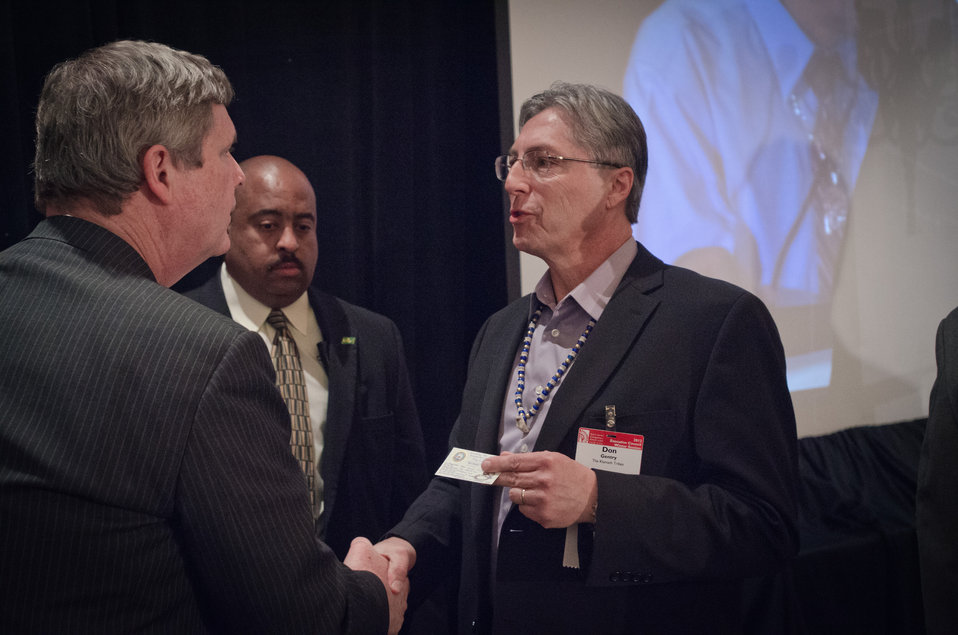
Agriculture Secretary Tom Vilsack spoke with the Klamath Tribes’ Don Gentry at the National Congress of American Indians Tribal Nations Legislative Summit at L’Enfant Plaza Hotel in Washington, D.C., on Wednesday March 7, 2012. Secretary Vilsack has made improving relations with Native American Tribes a priority by creating the Office of Tribal Relations and directed all U.S. Department of Agriculture (USDA) agencies to be more aware of tribal issues and engage in tribal consultation and collaboration. Secretary Vilsack reiterated USDA’s support to Native American communities with financial support for electric, broadband and wastewater infrastructure, and providing families and businesses with home loans and business grants. Secretary Vilsack emphasized USDA’s participation in the First Lady’s Lets Move in Indian Country initiative to combat childhood obesity in tribal communities.